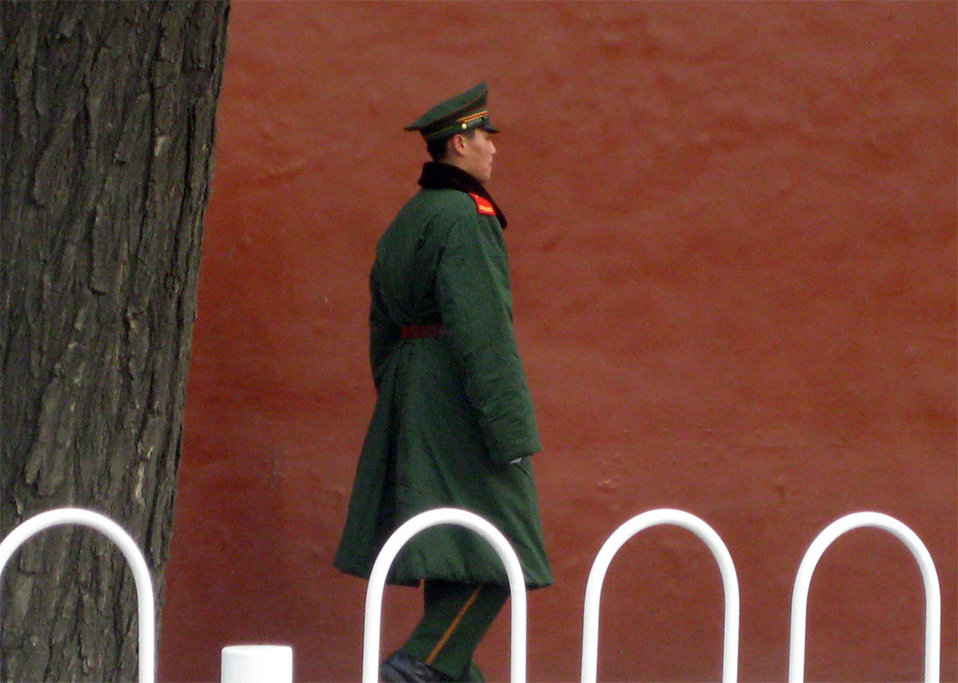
Guards in Beijing

Behind the Scenes: Guards patrolling in Beijing, China February 21, 2009.